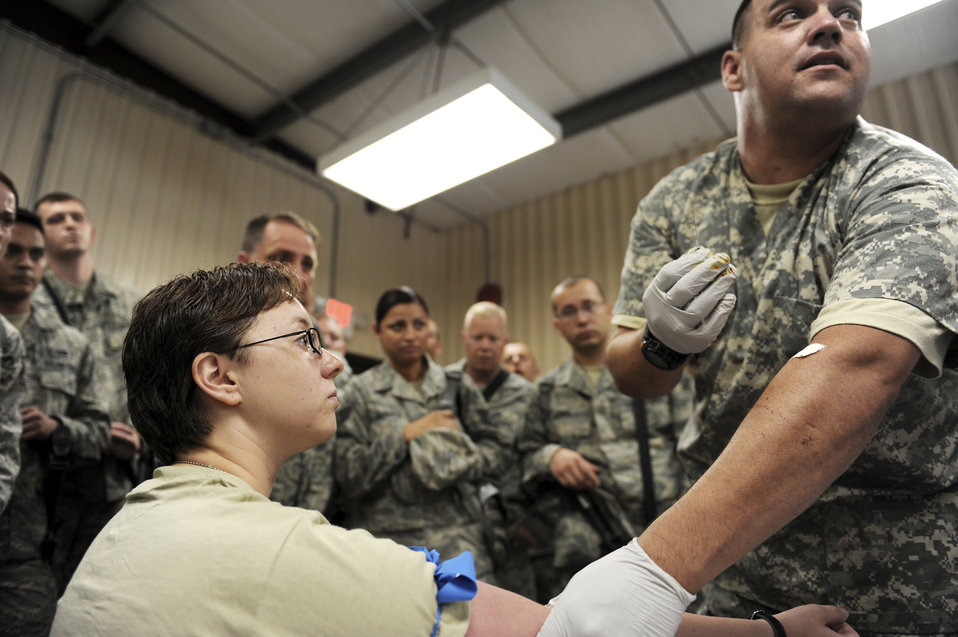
Combat Skills Training

U.S. Army Spc. James Higdon (right) shows how to start an intravenous infusion on Staff Sgt. LeAnne Borsvold during the combat lifesavers course July 29 at Fort Dix, N.J. Sergeant Borsvold is a radio frequency systems technician assigned to the 381st Intelligence Squadron at Elmendorf Air Force Base, Alaska. Specialist Higdon is a combat medic assigned to the 72nd Field Artillery Battalion at Fort Dix.